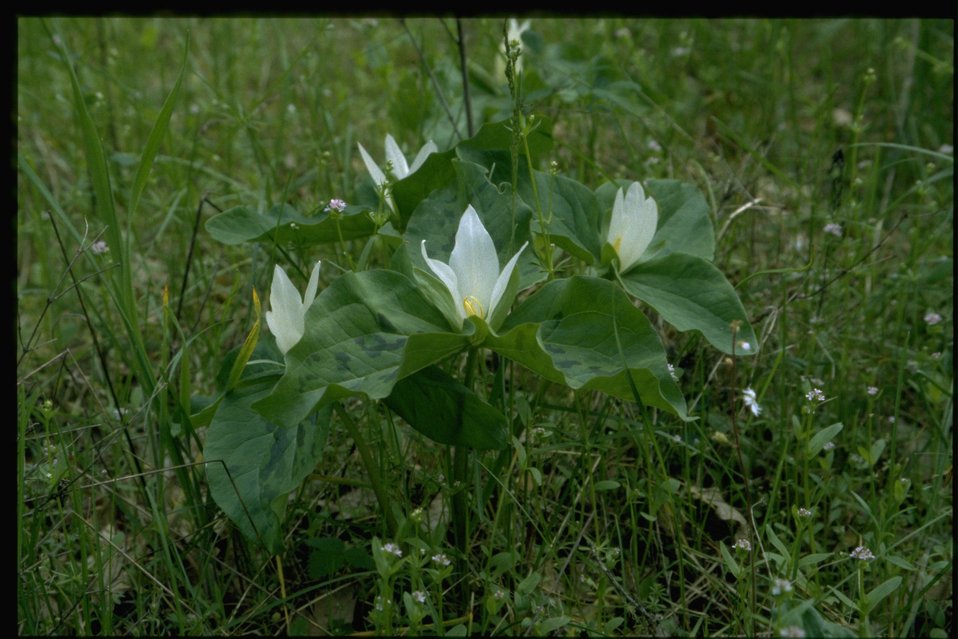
Medium shot of Trillium albidum.